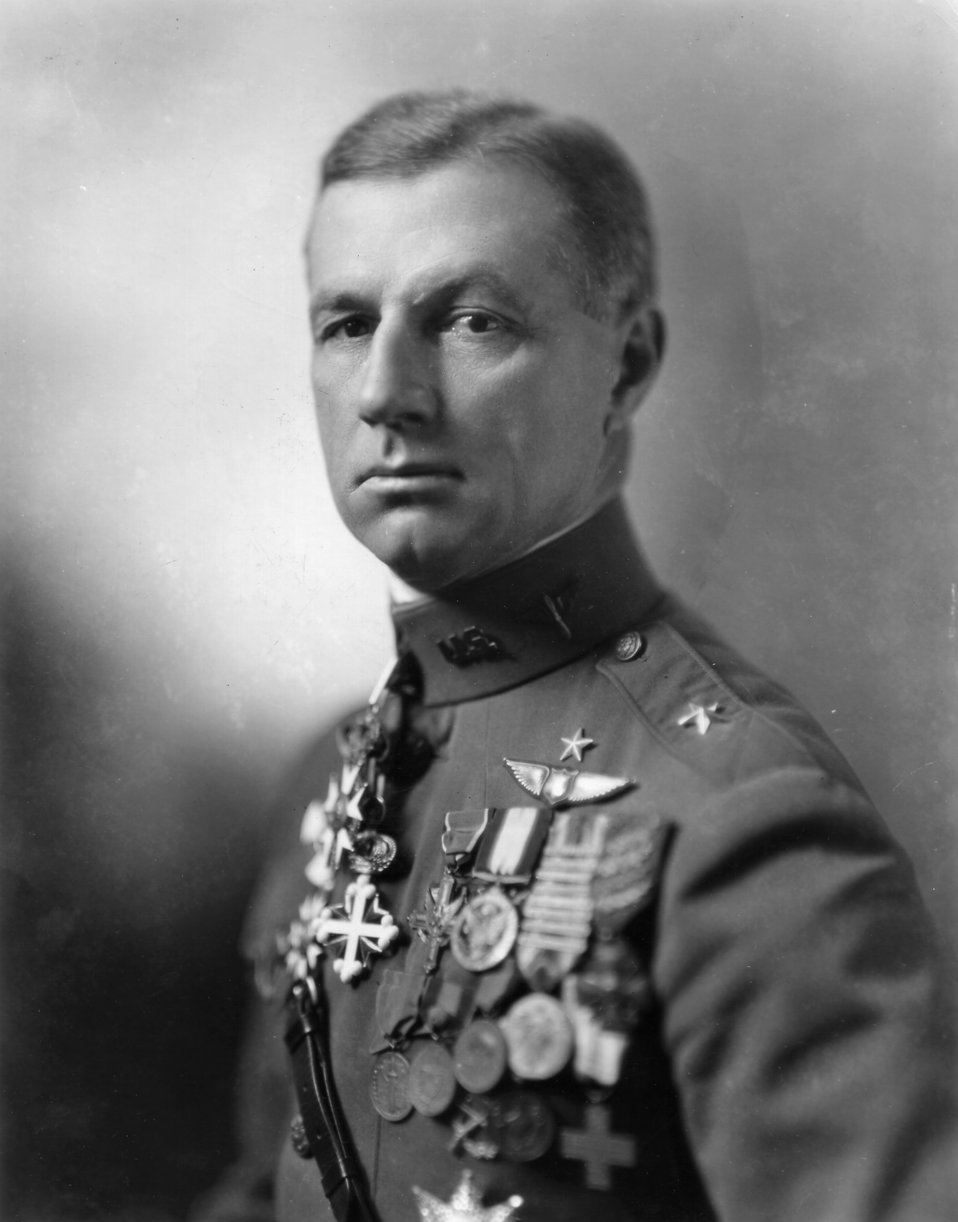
Billy Mitchell

Brig. Gen. William